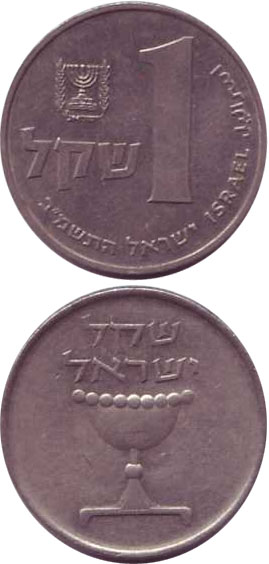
1 old Shekel coin - התשמ'ג